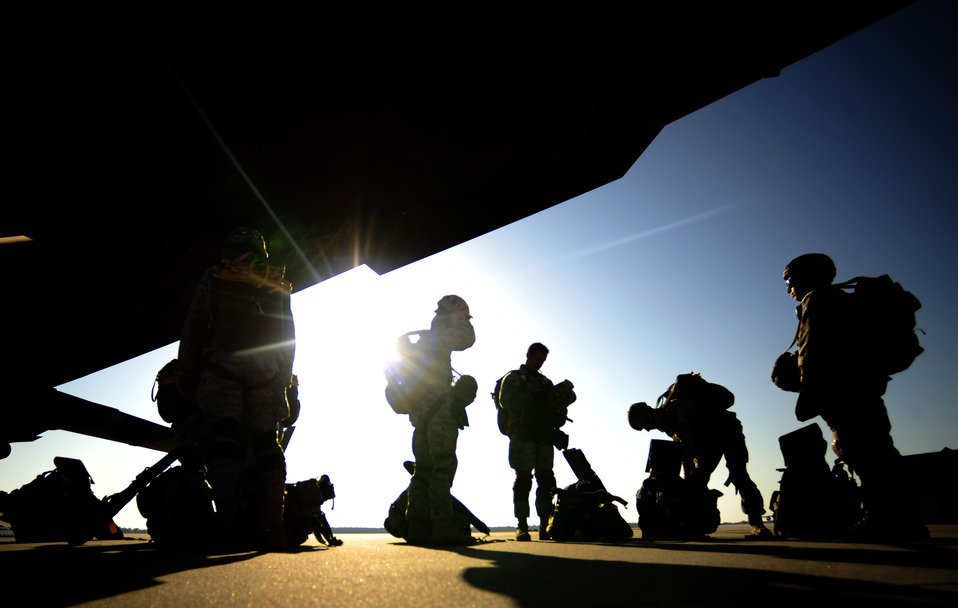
Charleston loadmasters prepare for training mission

Airmen assigned to the 820th Security Forces Group at Moody Air Force Base, Ga., get ready to board a C-17 Globemaster III April 5, 2010, for a local training mission over North Field, S.C. The Moody Airmen are training with the 317th Air Reserve Squadron at nearby Charleston Air Force Base.